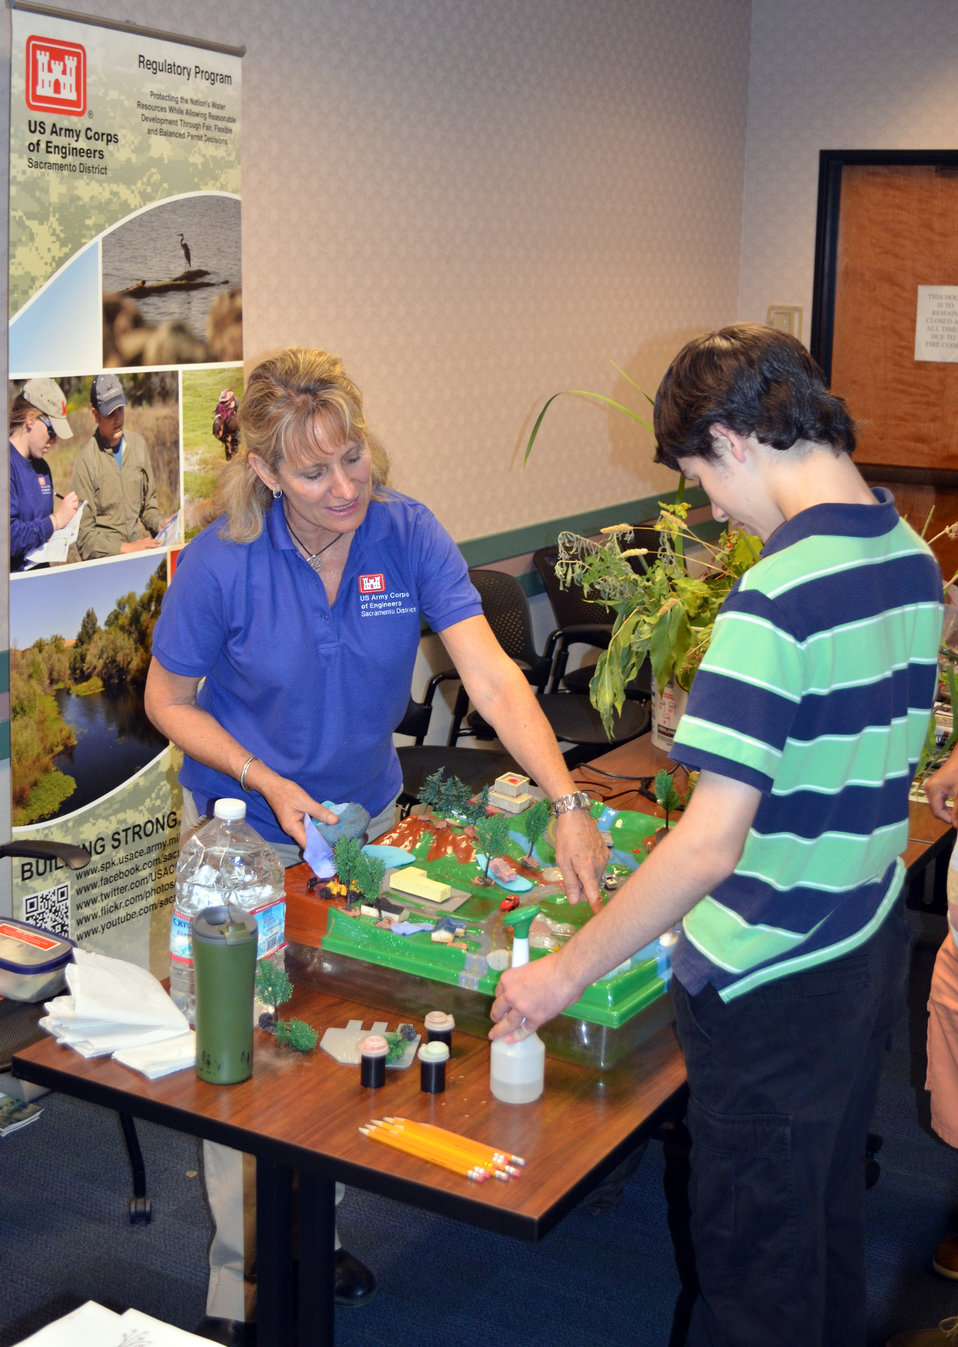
“Bring Your Child to Work Day” promotes science and technology jobs

Susan Clark, a regulatory project manager with the U.S. Army Corps of Engineers Sacramento District, uses a watershed model to show how wetlands clean and filter water during the “Bring Your Child to Work Day” event Aug. 8, 2013 at district headquarters in Sacramento, Calif. The district hosted the event to encourage kids to pursue careers in science, technology, engineering and mathematics, or STEM.